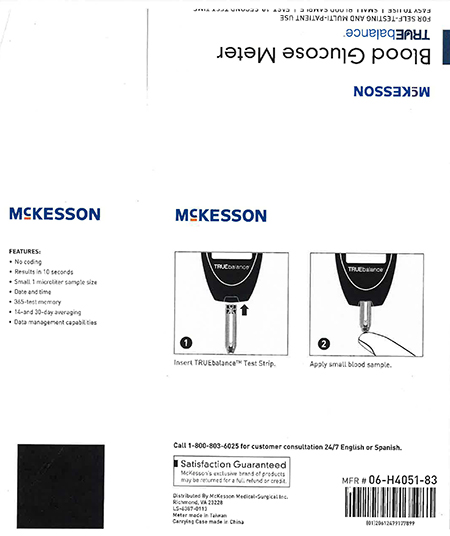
RECALLED – Blood Glucose Meters

January 2, 2014 – Product Recall – Nipro Diagnostics, Inc. Initiates Voluntary Recall of Certain TRUEbalance and TRUEtrack Blood Glucose Meters.